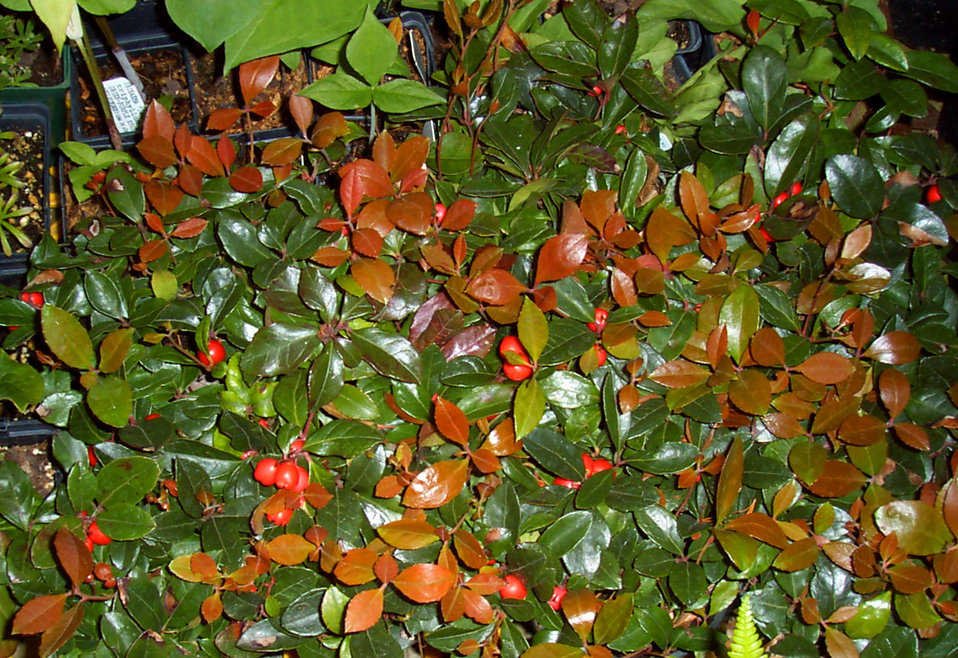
Teaberry

Gaultheria procumbens (Teaberry), a native plant

Learn more about EPA’s Exhibit at the 2010 Philadelphia International Flower Show:
www.epa.gov/reg3esd1/garden/flower show.htm
www.epa.gov/reg3esd1/garden/flower show plants.htm
www.epa.gov/reg3esd1/garden/pdf/flowershow2010.pdf (6 pp, 864K)